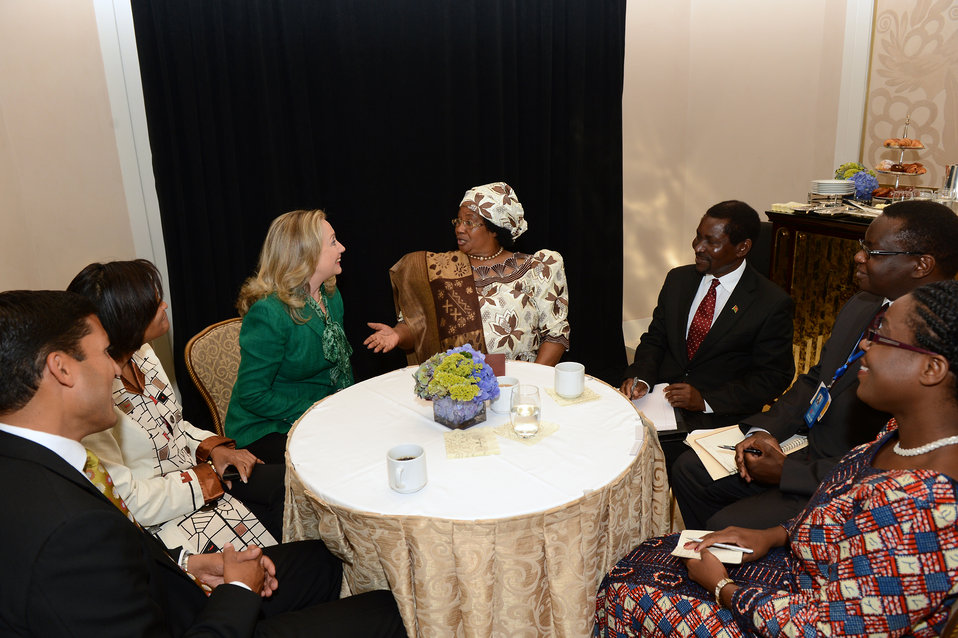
Secretary Clinton Meets With Malawian President Banda

U.S. Secretary of State Hillary Rodham Clinton meets with Malawian President Joyce Banda in New York, New York on September 27, 2012.